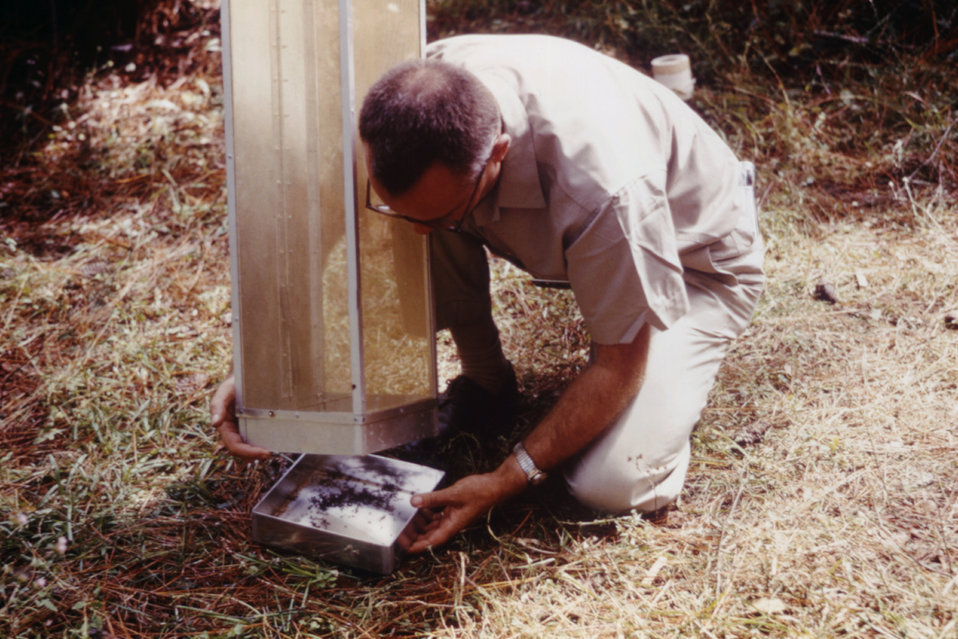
This CDC field researcher is removing a mosquito filled tray from a horse stable mosquito trap.